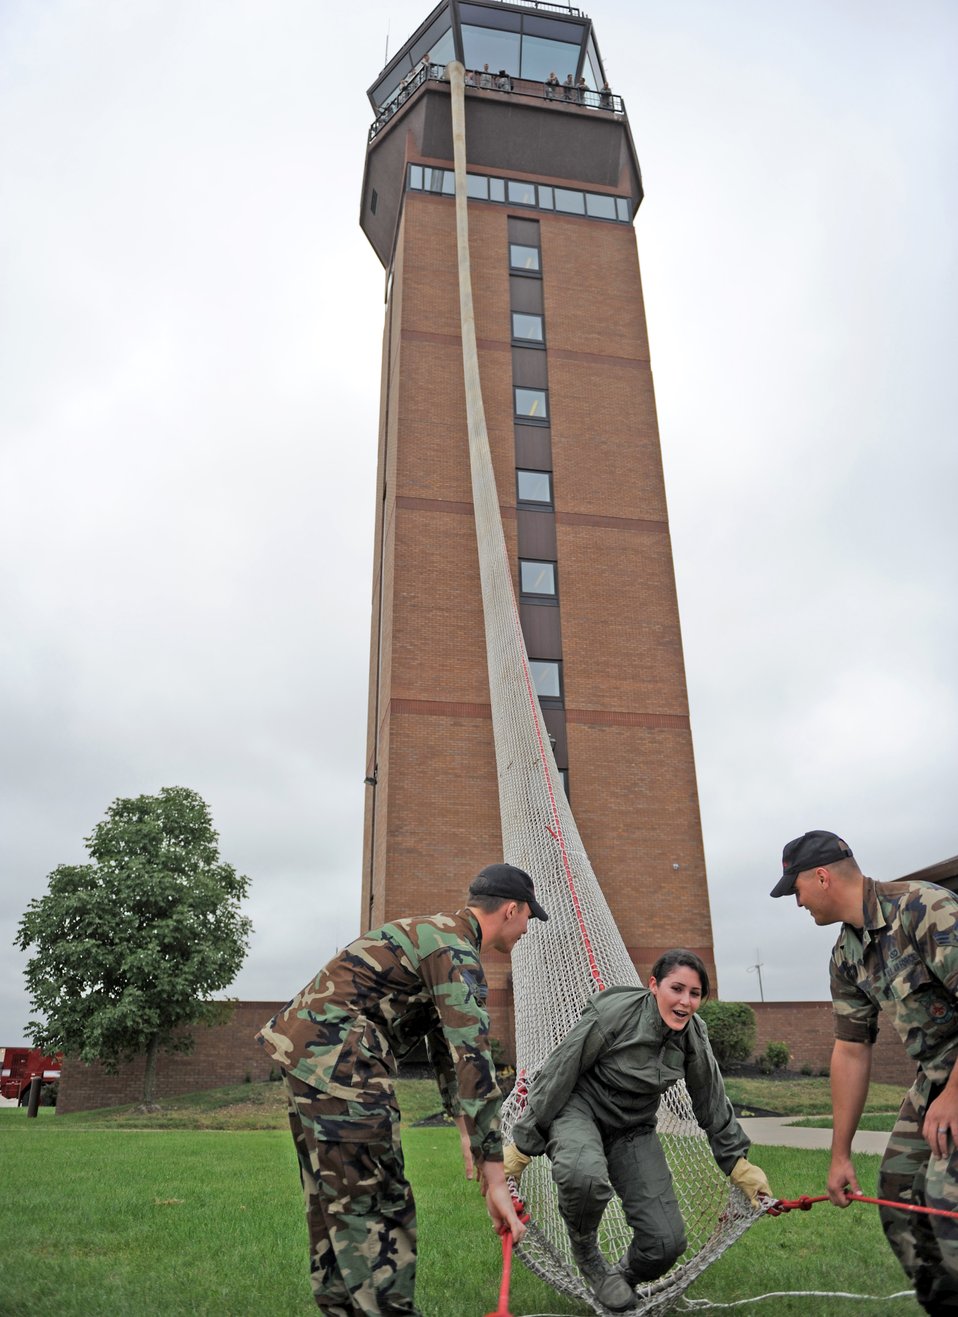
Extreme sliding

Airman 1st Class Anna Mayerhofer slides down the tower escape chute and is helped out by members of the 509th Fire Department Sept. 22, 2009, at Whiteman Air Force Base, Mo. People who work in the tower must train to ensure they can escape from the tower in case of an emergency. Airmen Mayerhofer is assigned to the 509th Operations Support Squadron.